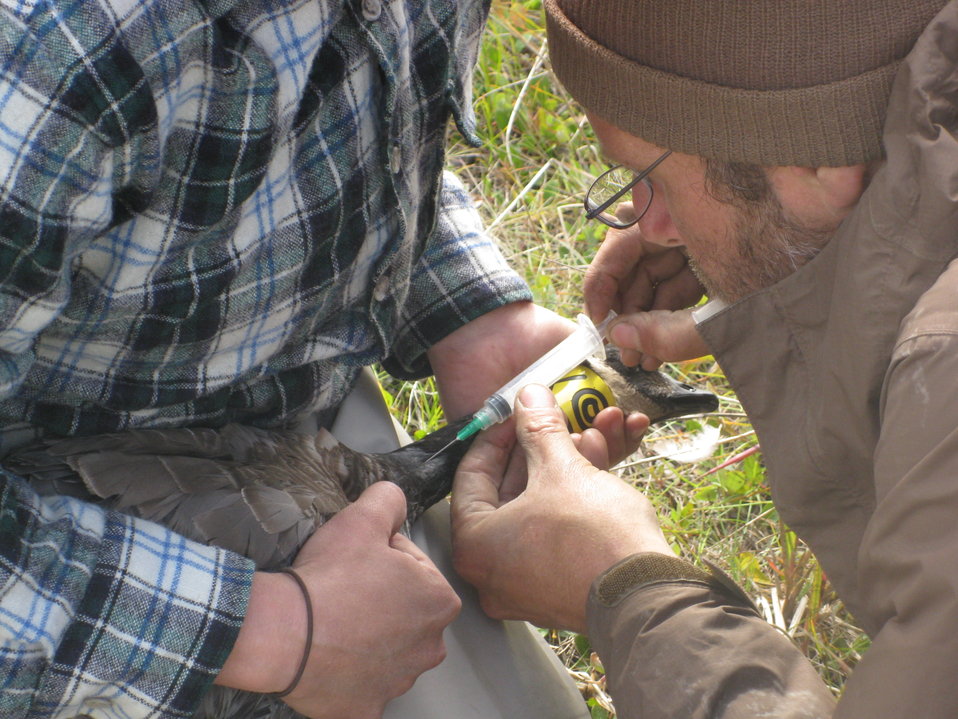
Drawing blood

USFWS Yukon Delta NWR